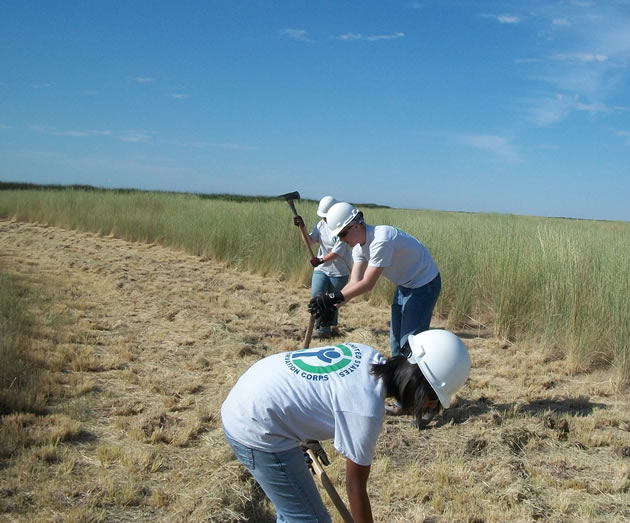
Youth Conservation Corps Work on Trail Project

Youth Conservation Corps crew increase trail length near the James V. Hansen visitor center at Bear River Migratory Bird Refuge.